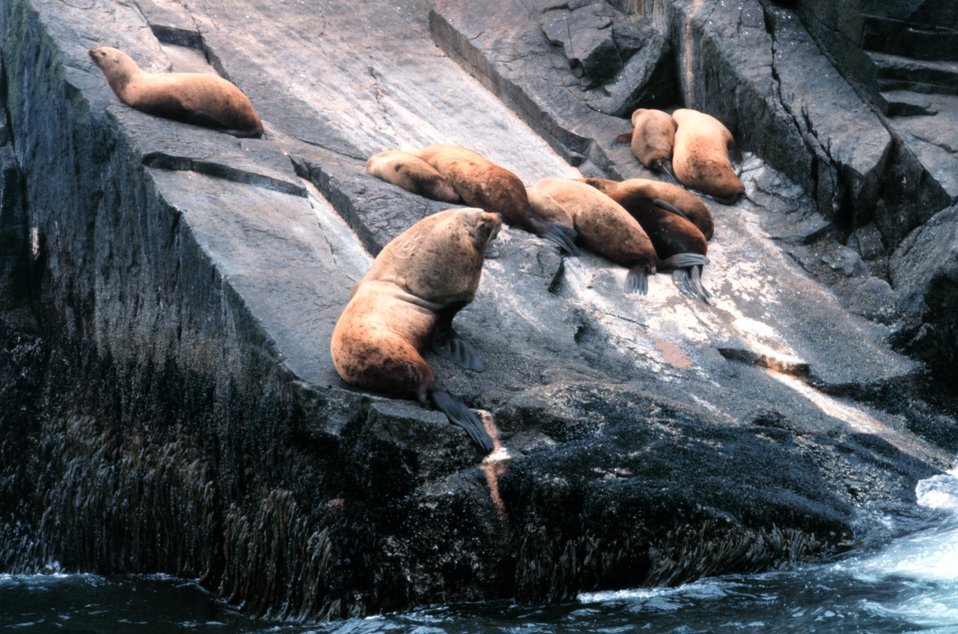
A large bull sea lion stands guard over his harem.